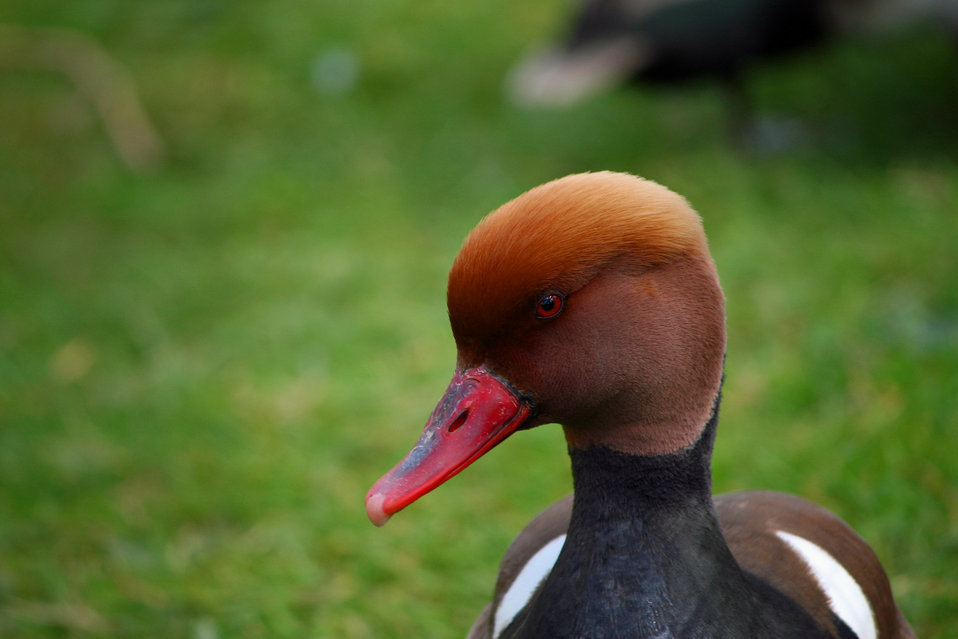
Pochard

Beautiful close up photo portrait of a red headed pochard duck.